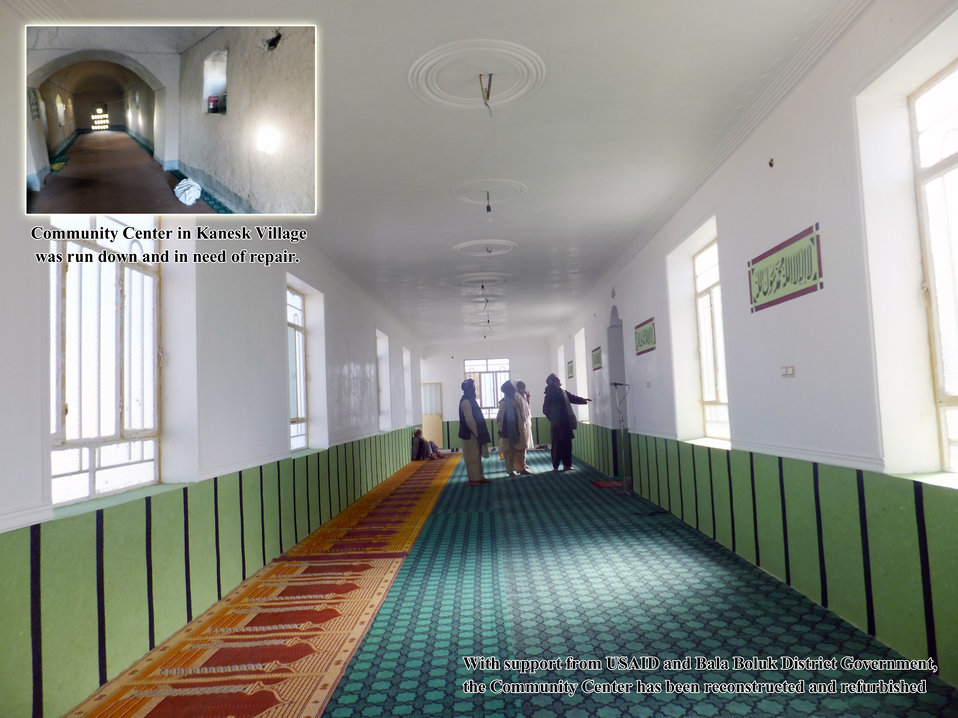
Community Center inside